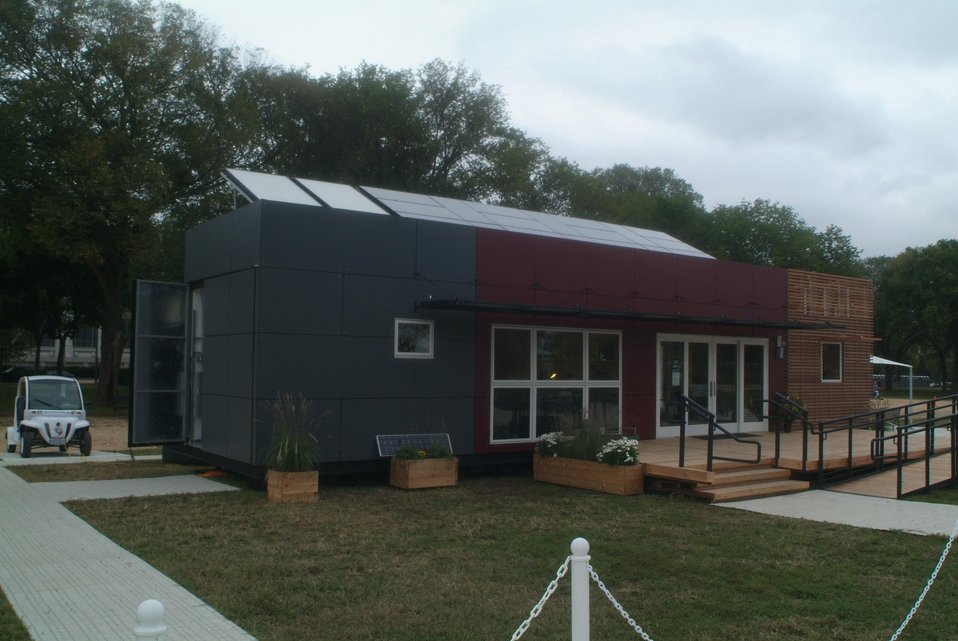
CALIFORNIA POLYTECHNIC STATE UNIVERSITY WAS GIVEN THE THIRD PLACE PRIZE IN THE 2005 SOLAR DECATHLON.

THE SOLAR DECATHLON HELD ON OCTOBER 7 - 16, 2005 IN WASHINGTON, DC. THE PARTICIPANTS WERE FROM 18 COLLEGES AND UNIVERSITIES AROUND THE WORLD. THE TEAMS COMPETED IN THE DESIGN, BUILD AND OPERATED THE MOST ATTRACTIVE AND ENERGY-EFFICIENT SOLAR POWERED HOME. THE PARTICIPANTS ONLY USED ENERGY FROM THE SUN TO GENERATE ELECTRICITY TO OPERATE A HOME.